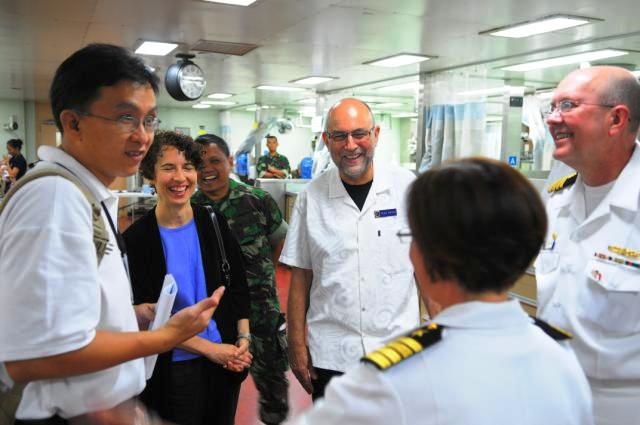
Consul General Bauer and FSO Weinz Tour the Surgical Department

U.S. Consul General Kristen Bauer (Surabaya) and Foreign Service Liaison Officer Tom Weinz tour the surgical department on USNS MERCY during Pacific Partnership 2010 in Indonesia., on July 18, 2010.